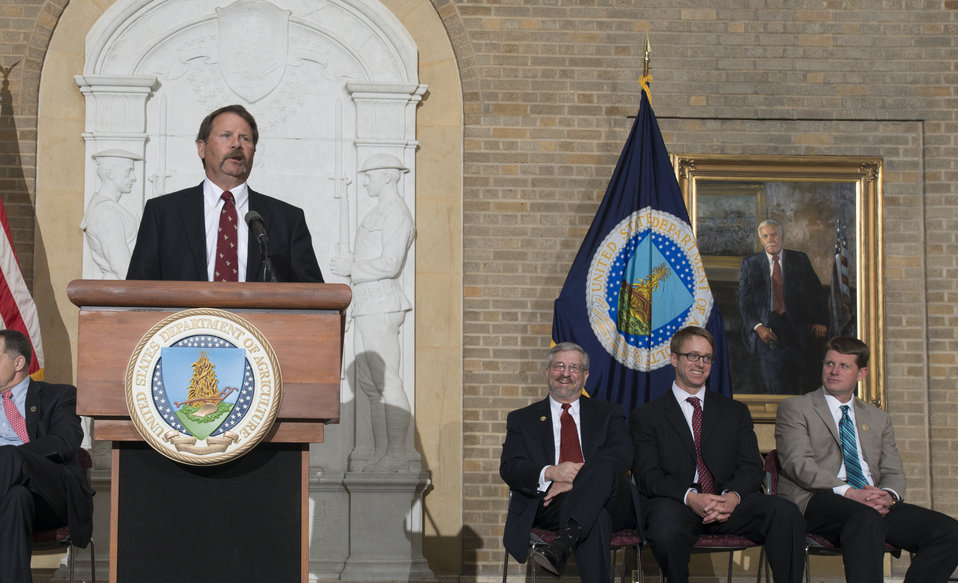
Ducks Unlimited/USA Rice Federation event is held at the U.S. Department of Agriculture (USDA) in Washington, D.C. on Tuesday, May 6, 2014.